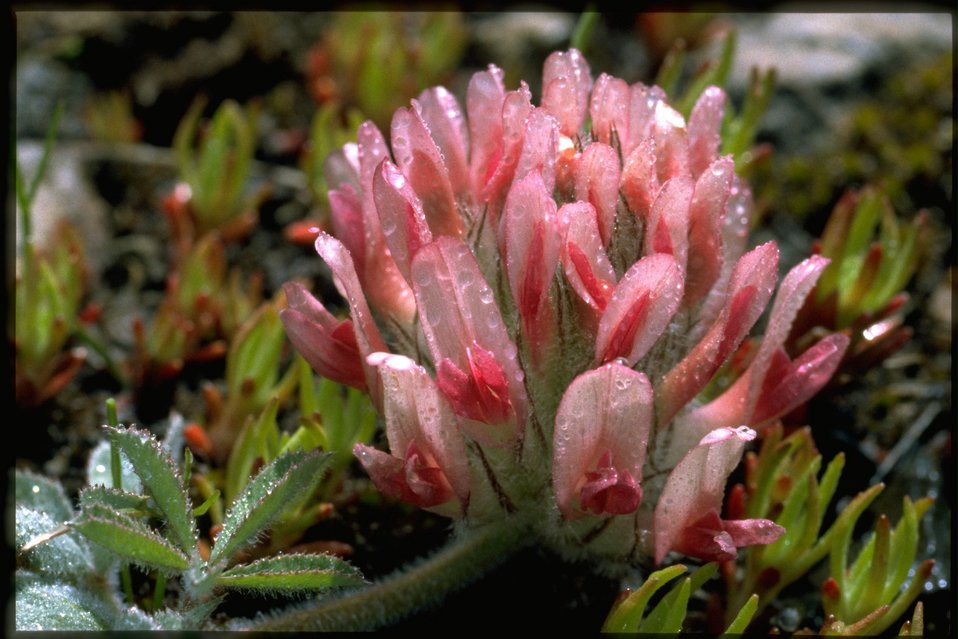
Closeup shot of Big-headed clover, Trifolium macrocephalum.